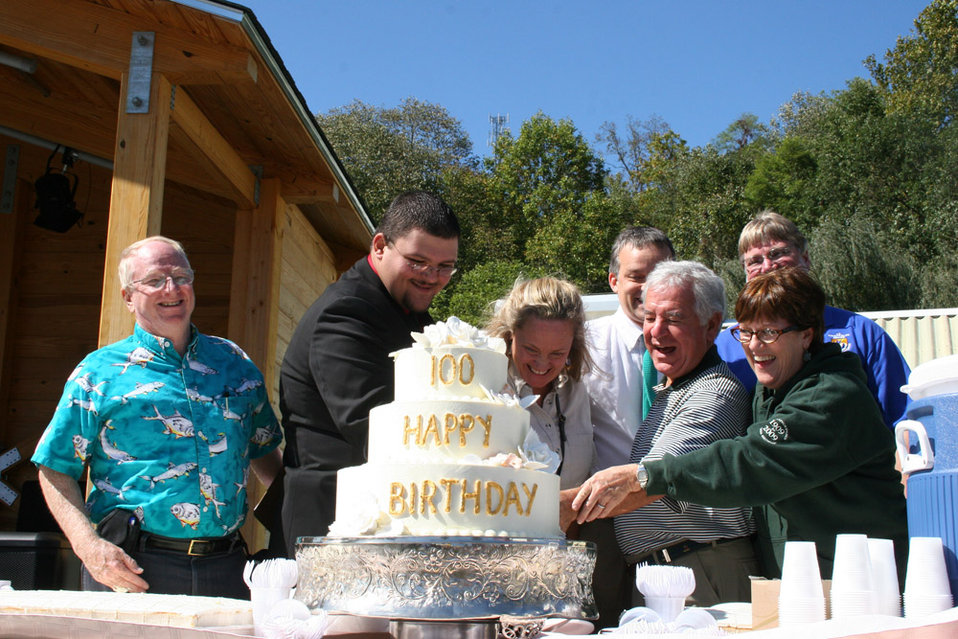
Freshwater Folk Festival

The 5th Annual Freshwater Folk Festival at White Sulphur Springs National Fish Hatchery in West Virginia.Credit: USFWS